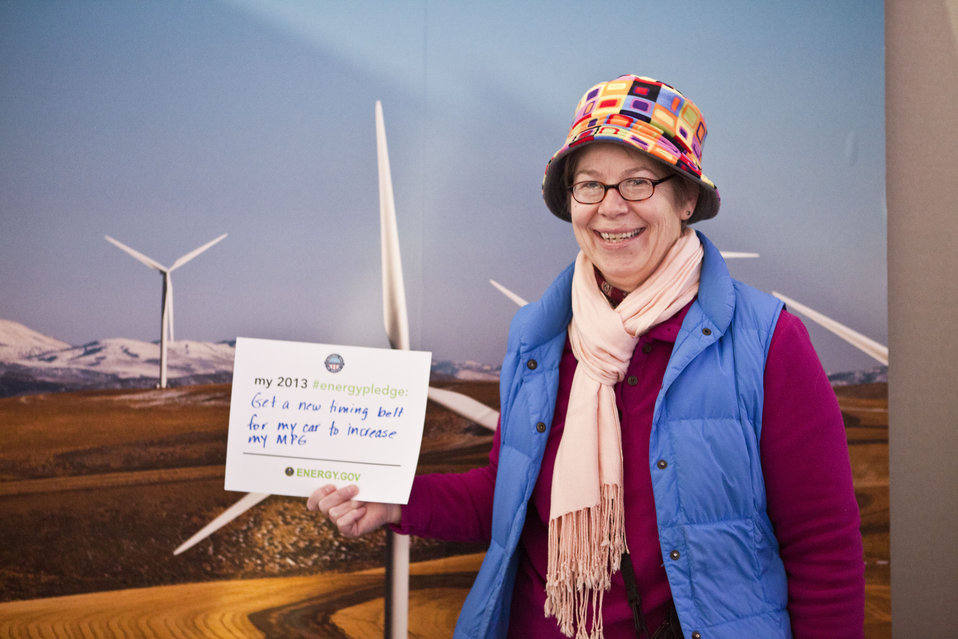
What's your #energypledge?